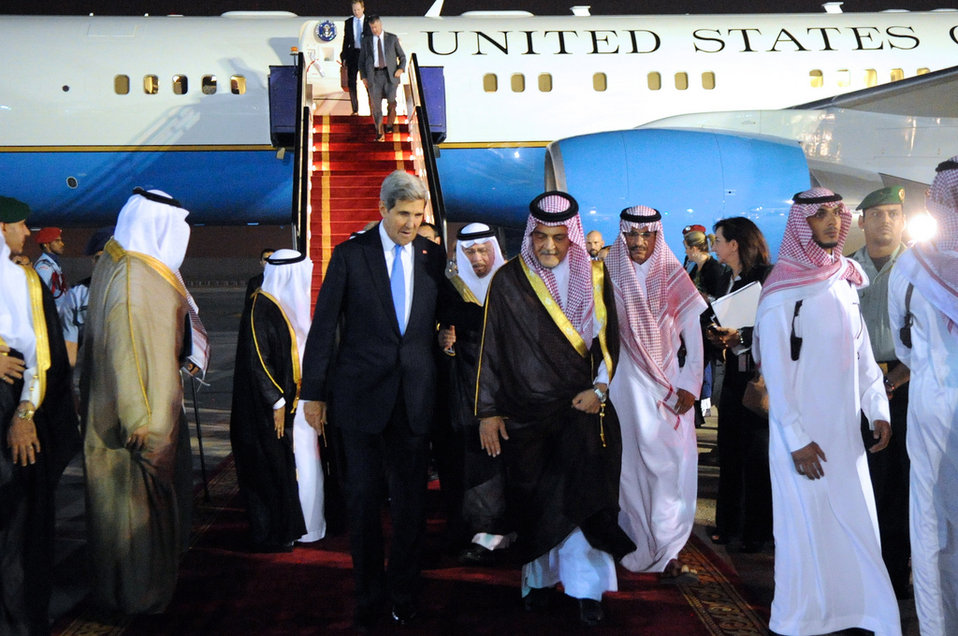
Saudi Foreign Minister al-Faisal Escorts Secretary Kerry

Saudi Foreign Minister Prince Saud al-Faisal escorts U.S. Secretary of State John Kerry after he arrived in Riyadh, Saudi Arabia, on November 3, 2013.